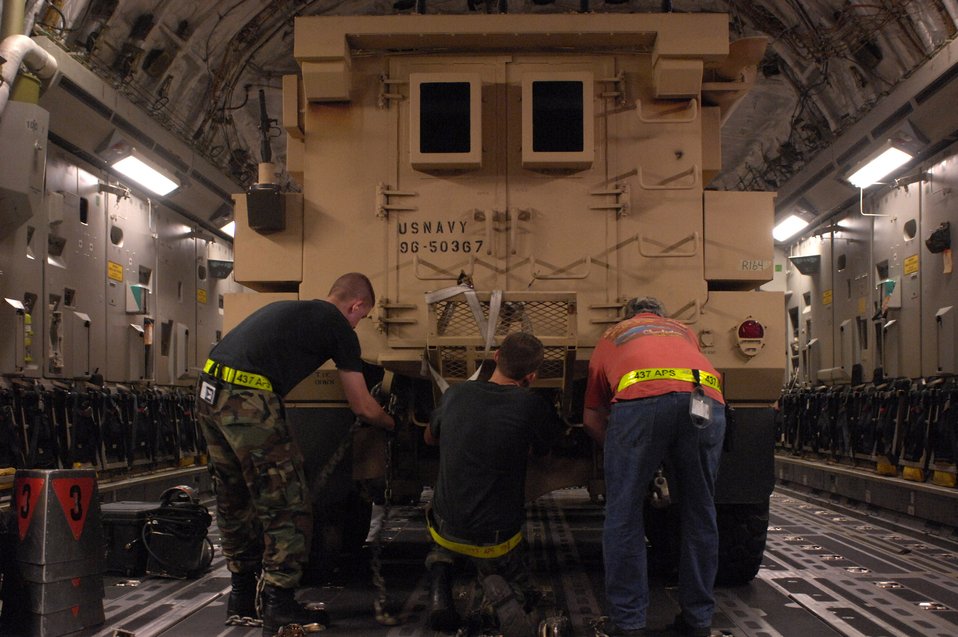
Destination: Iraq

Airmen from the 437th Aerial Port Squadron at Charleston Air Force Base, S.C., chain down a Mine Resistant Ambush Protected armored vehicle on a C-17 Globemaster III for shipment to Iraq July 28. An estimated 3,500 MRAP vehicles are expected to be in Iraq by Dec. 31.